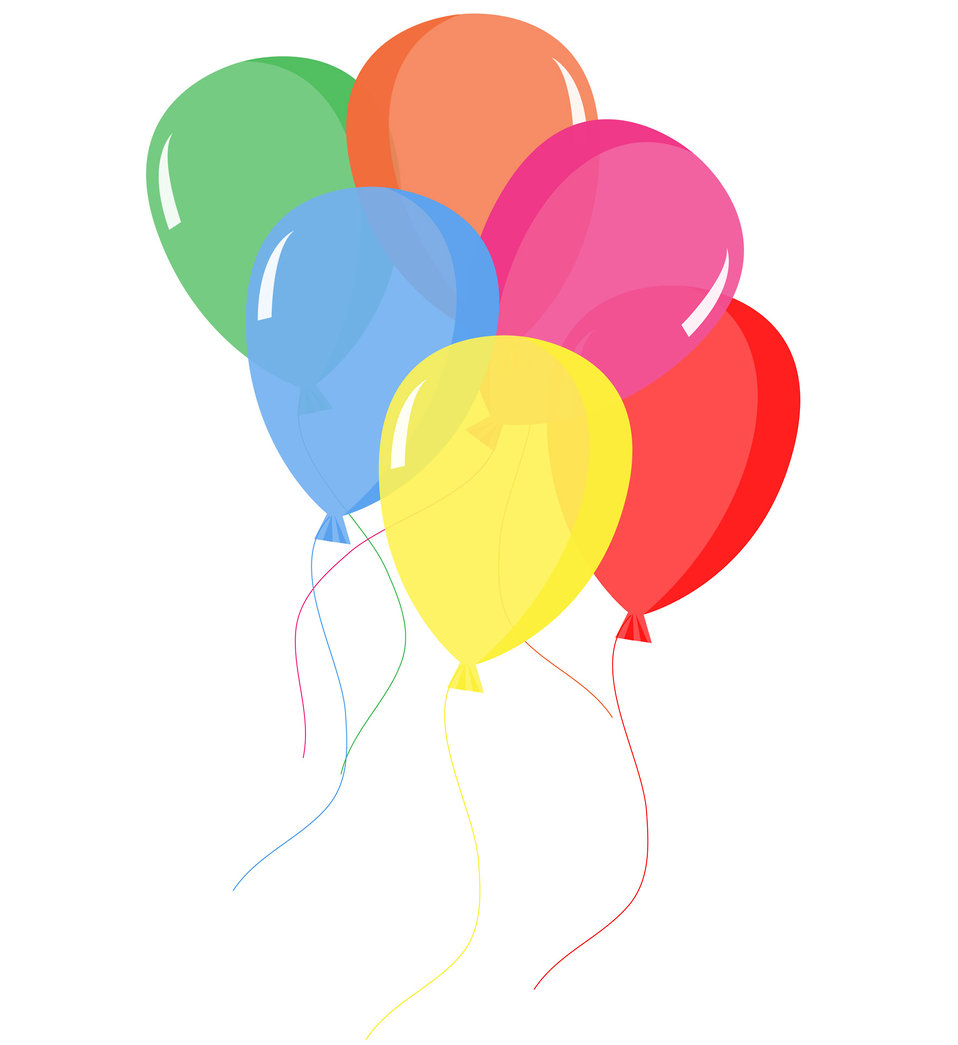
Balloons colorful

Bunch of colorful balloons clipart.